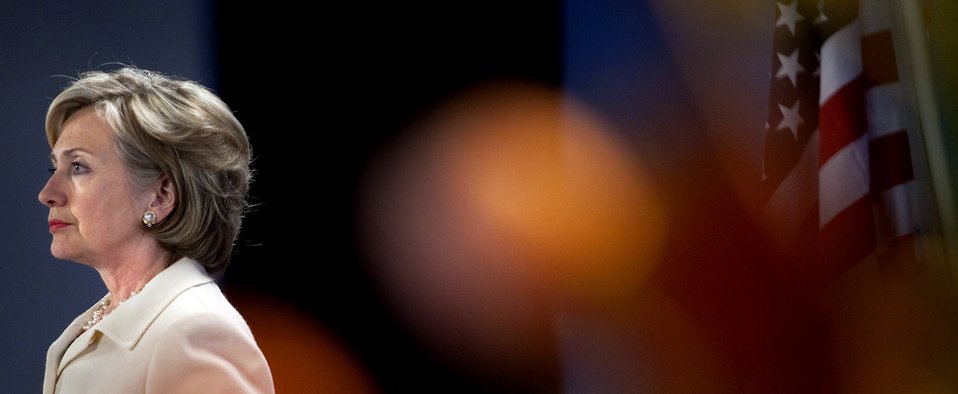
Secretary Clinton Speaks to Press at The Hague

U.S. Secretary of State Hillary Rodham Clinton leads a press conference at the World Forum Convention Centre in The Hague during the International Conference on Afghanistan March 31, 2009. Over 90 countries joined this conference.